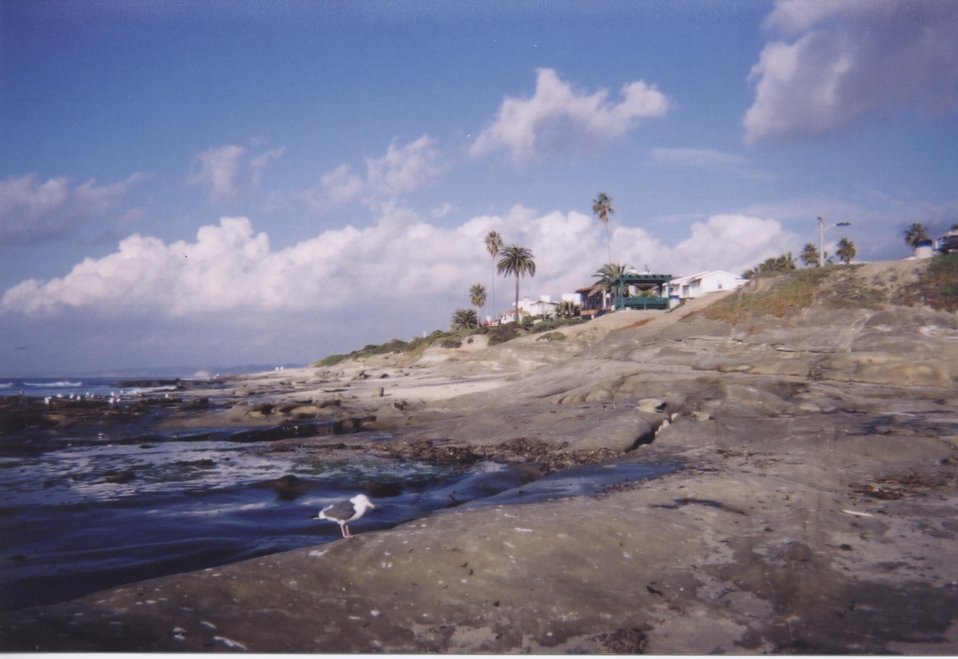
La Jolla Photo: G Larson